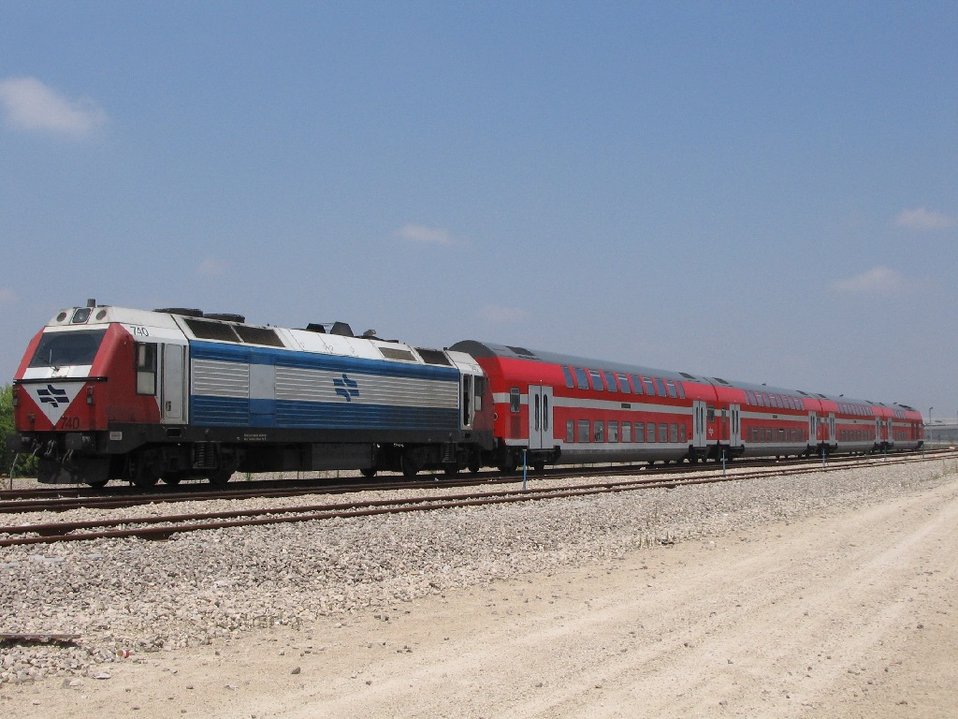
עברית: רכבת מדויירת בתחנת הרכבת נתב'ג תפעולית